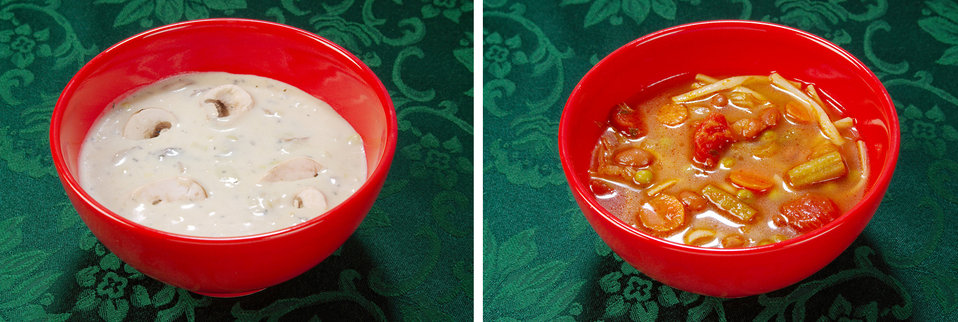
This image tells a story. Its theme is you can make the healthier choice when deciding on a meal. On the left is a bowl of cream-based mushroom bisque soup, equaling 400 calories. On the right is bowl broth-based minestrone soup, equaling 112 calories.